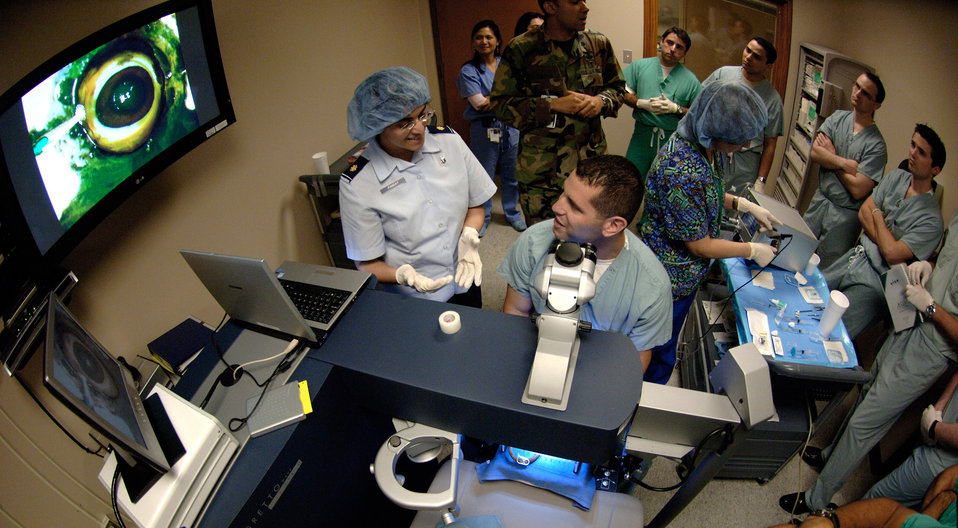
Refractive surgery training

Ophthalmologist Maj. (Dr.) Vasudha Panday (front left) discusses using the a microkeratome, a precision cutting tool used in LASIK surgery, with Capt. (Dr.) Michael Parsons (center) at the Joint Refractive Surgery Center, Lackland Air Force Base, Texas. Both Dr. Panday and Dr. Parsons are members of the 59th Surgical Specialties Squadron. Refractive surgery technician Rita Garza (right), 59th SSS, prepares the microkertome for Dr. Parsons to practice cutting on a training eyeball. Lt. Col. (Dr.) Sanford Roberts (back left), 59th SSS, discusses the procedure with ophthalmology residents from Wilford Hall Medical Center; Brooke Army Medical Center, Ft. Sam Houston, Texas; and University of Texas Health Science Center, San Antonio.